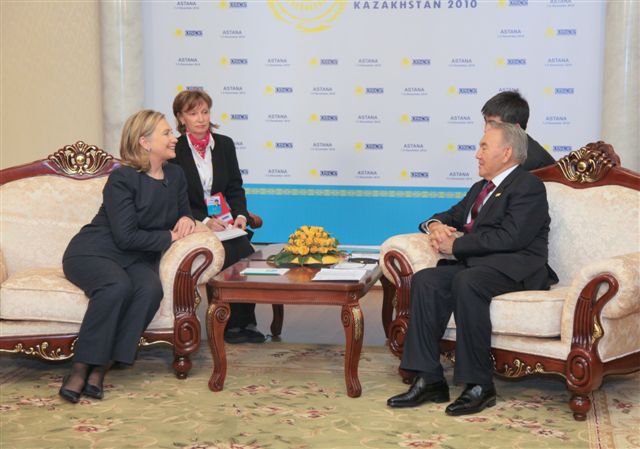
Secretary Clinton Meets With Kazakh President Nursultan Nazarbayev

U.S. Secretary of State Hillary Rodham Clinton meets with Kazakh President Nursultan Nazarbayev at the OSCE Summit in Astana, Kazakhstan, on December 1, 2010.